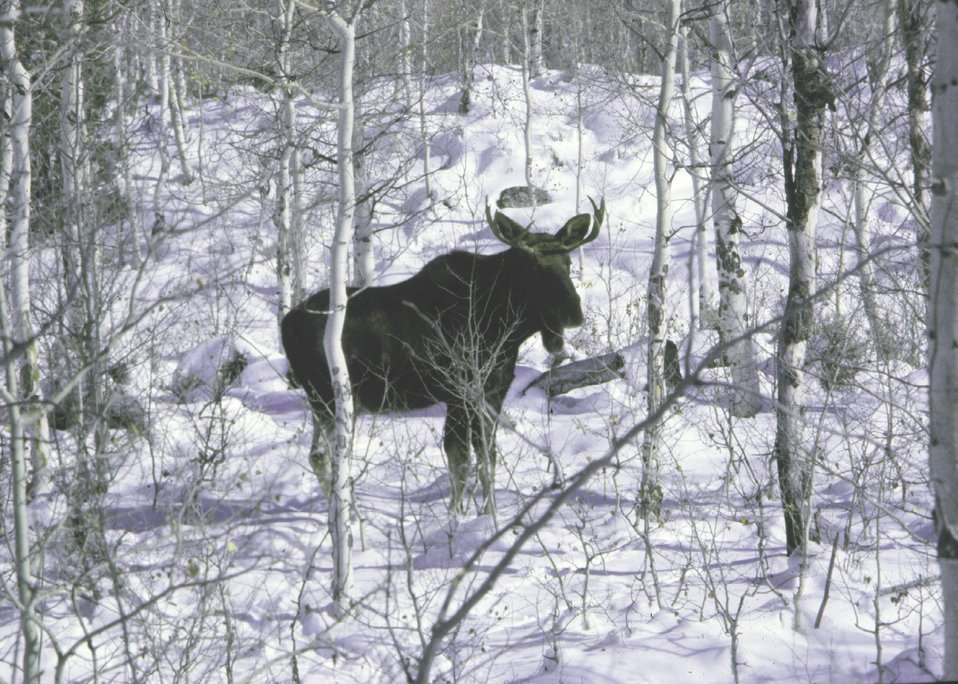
A moose on a snowy hillside in Wyoming.